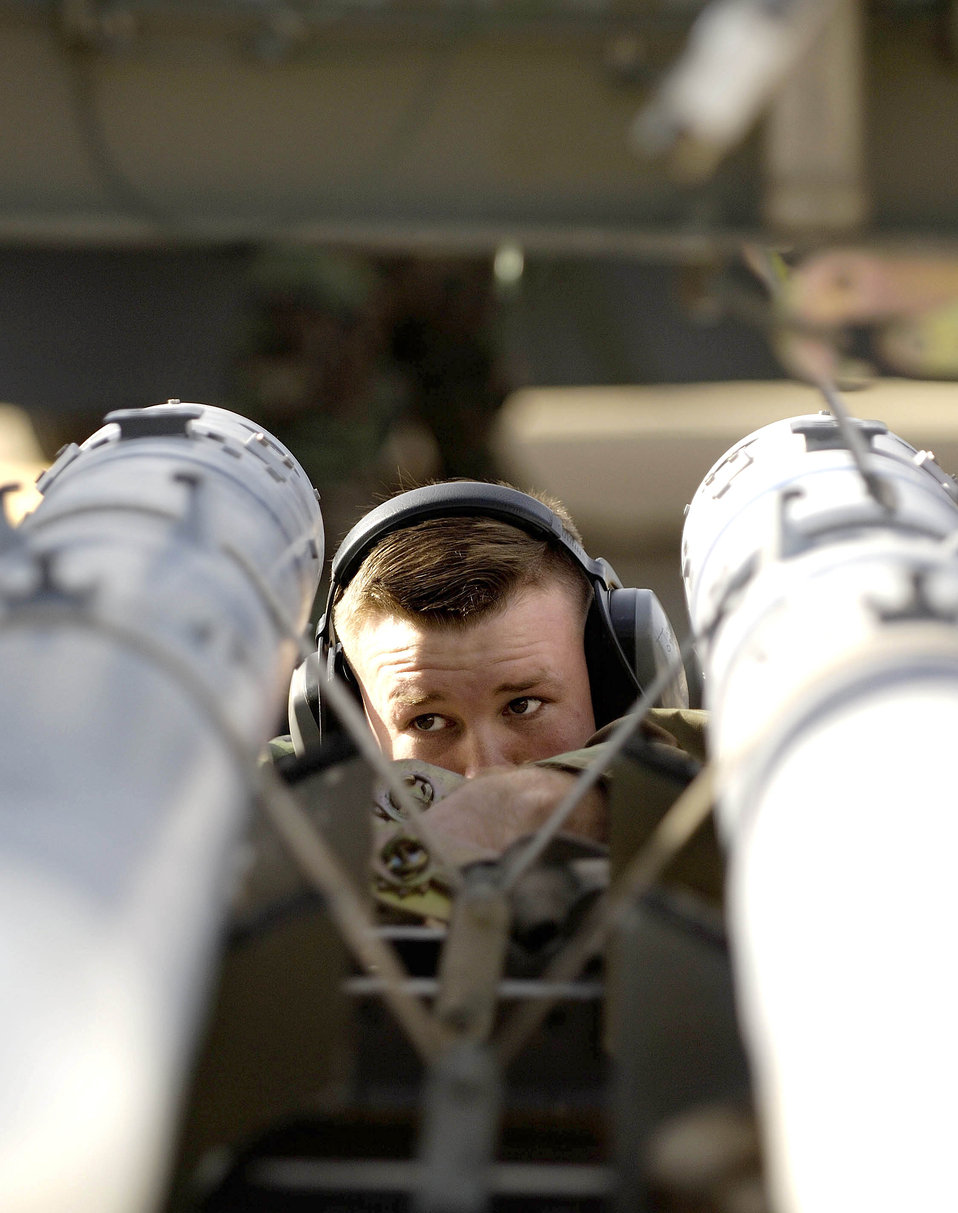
Up to the challenge

LANGLEY AIR FORCE BASE, Va. (AFPN) -- Senior Airman Tiegh Tinsley checks AIM-9 missiles before they are loaded onto the F-22A Raptor during the load crew of the year competition here. The event was part of the 1st Fighter Wing annual load competition in January and is the first one to include the Raptor. Airman Tinsley is assigned to the 27th Fighter Squadron Aircraft Maintenance Unit.